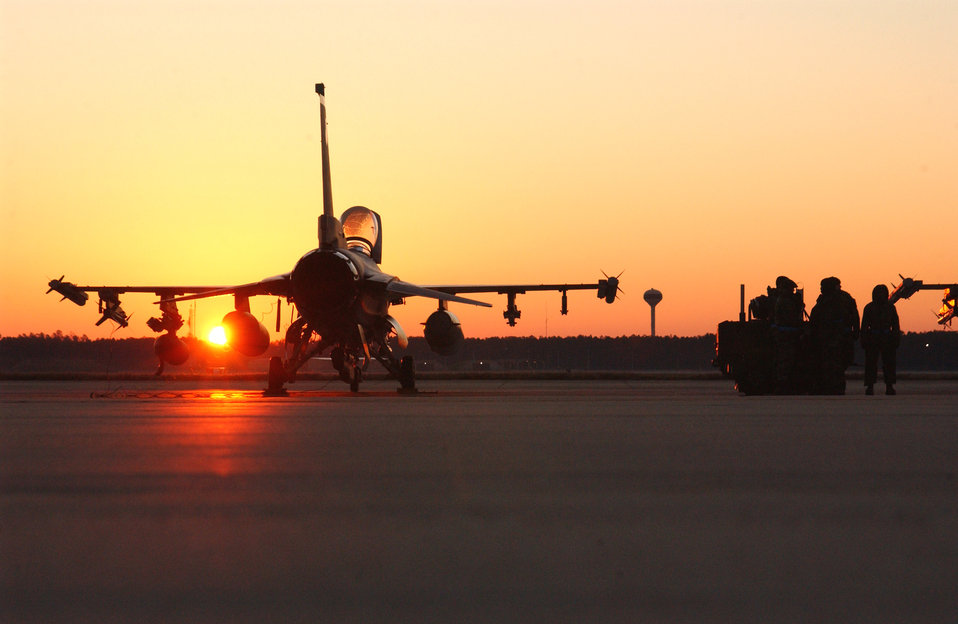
Exercising Falcons

Members of the 20th Fighter Wing generate F-16 Fighting Falcons in support of Operational Readiness Exercise Sea Lion 07-03 Jan. 26 at Shaw Air Force Base, S.C. Exercises prepare Airmen for future deployments.